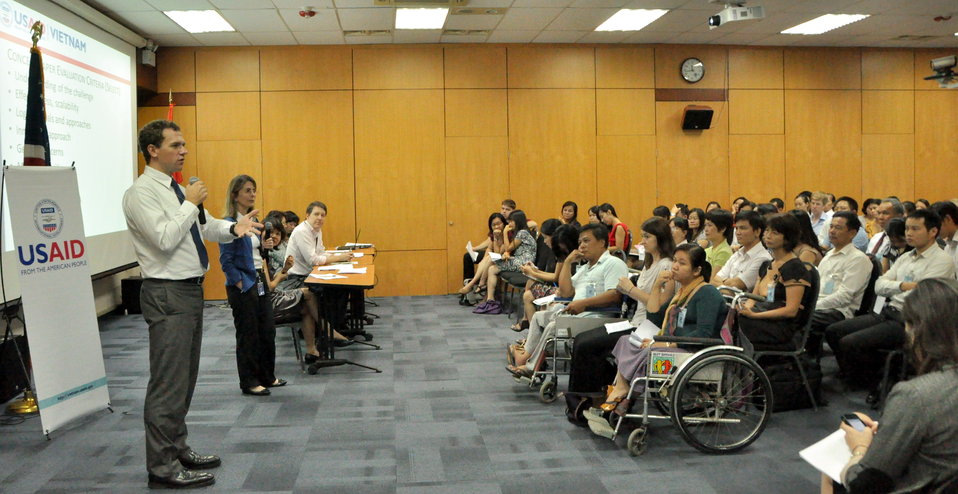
Development Grants Program Workshop in Hanoi

July 24, 2013